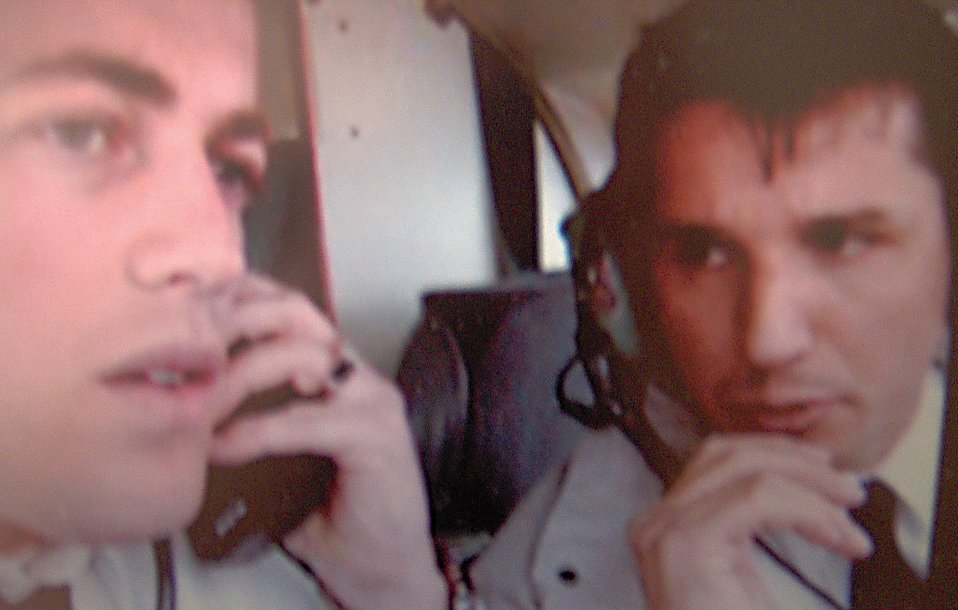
Spangdahlem pilot rescues charter plane over Germany

OVER GERMANY (AFPN) -- Artan Berisha (left) and Naim Fazlija make a distress call to a German radar controller. The Piper Chieftain charter aircraft pilots made the call Nov. 15 after the plane's electrical system failed.